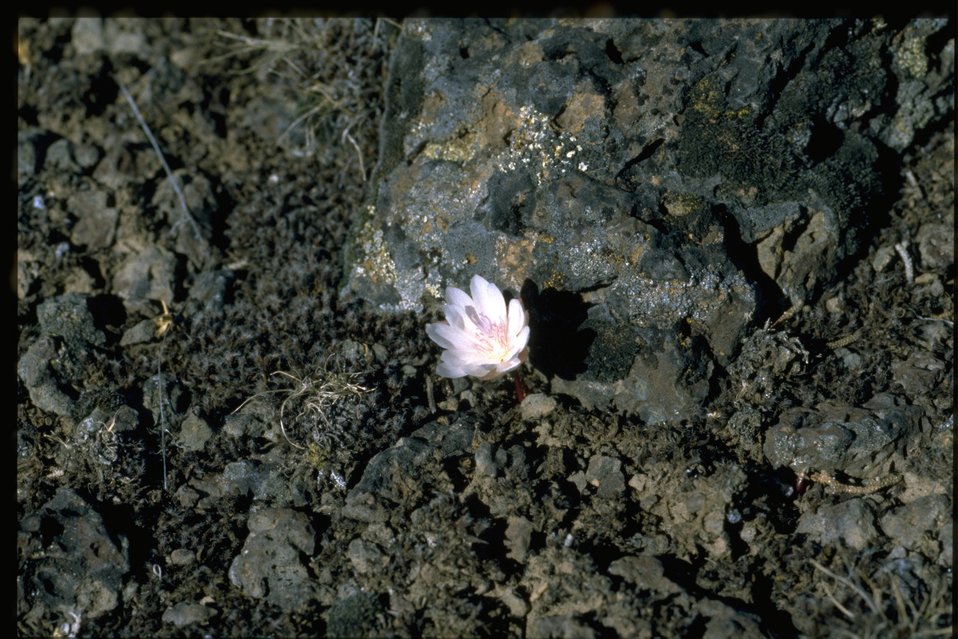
Farshot of bitter root (Lewisia rediviva).